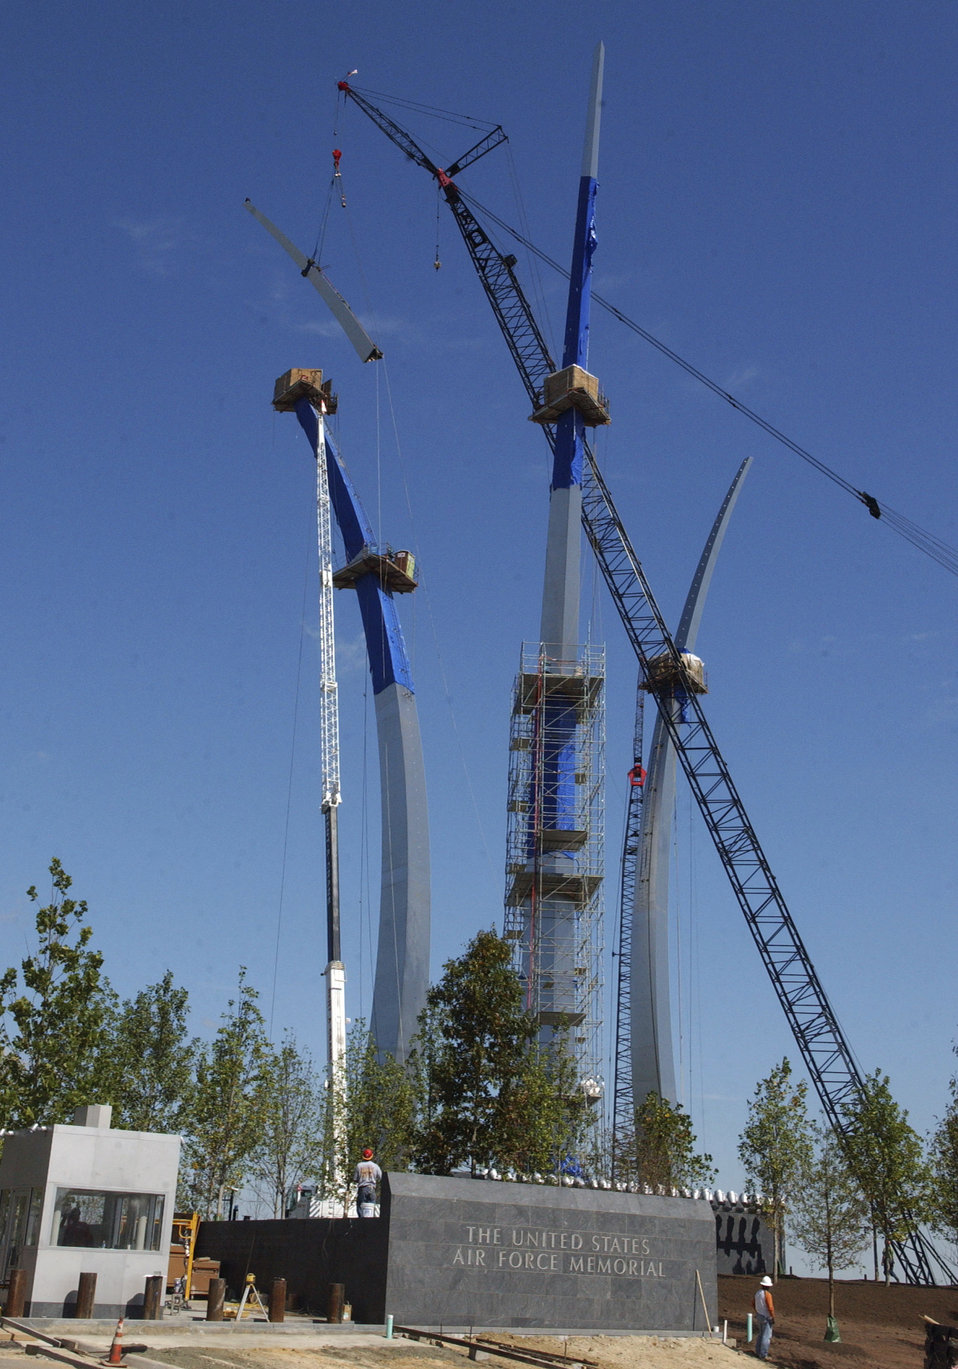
Air Force Memorial's soaring spires completed

The third spire of the new Air Force Memorial was completed on Sep 21. The memorial, which overlooks Arlington Cemetery outside Washington D.C. will be officially dedicated Oct 14.